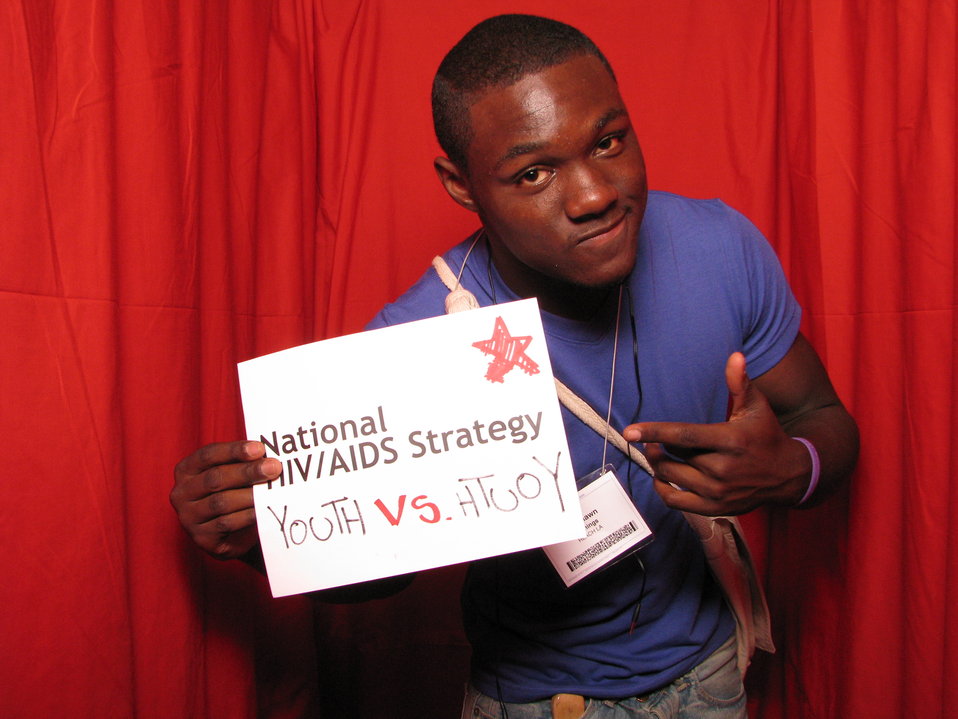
National HIV/AIDS Strategy Youth vs. Youth

From the AIDS.gov photo booth at the U.S. Conference on AIDS, September 2010 (Orlando, FL).